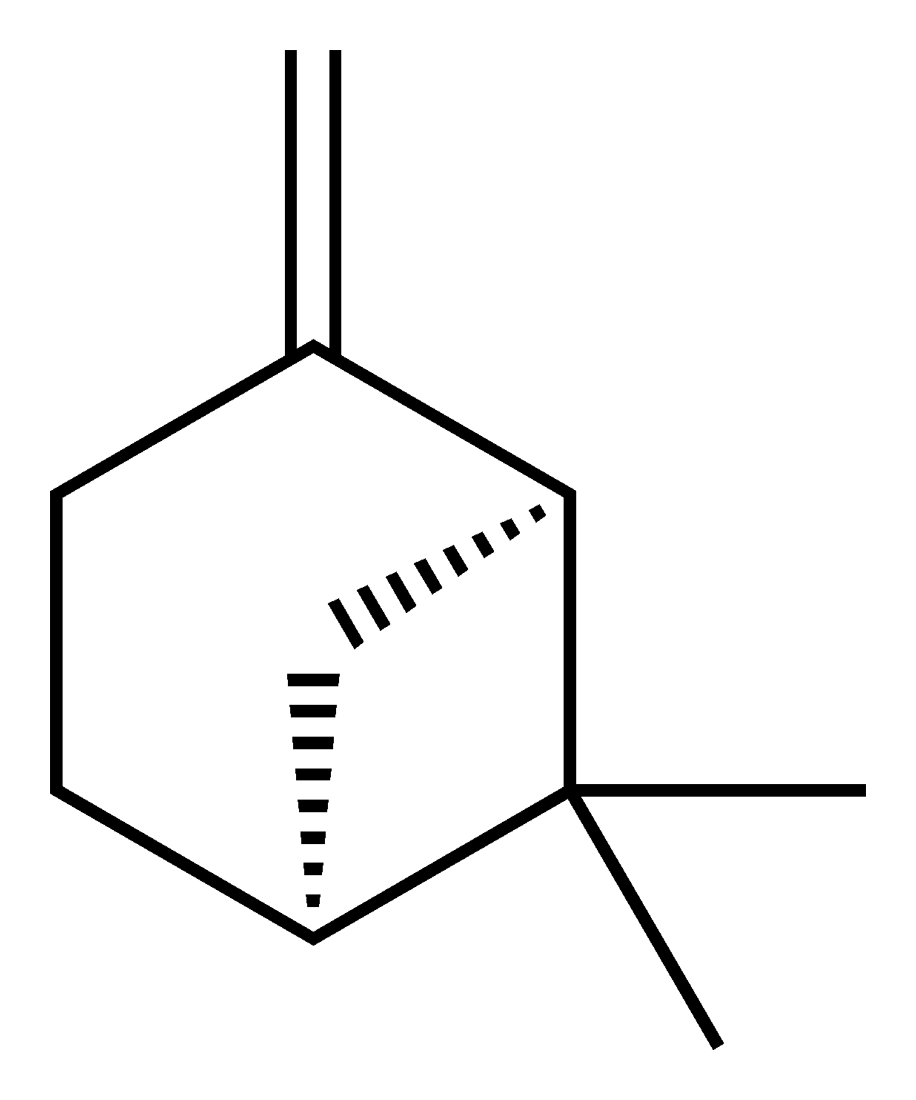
Skeletal formula of the (1S)-(−)-β-pinene molecule, C10H16. Skeletal formula from A. D. Bond and J. E. Davies (November 2001). '(1S)-(−)-β-Pinene'. Acta Cryst. 'E57' (11): o1041-o1042. DOI:10.1107/S1600536801016427. Image generated in Accelrys DS Visualizer.